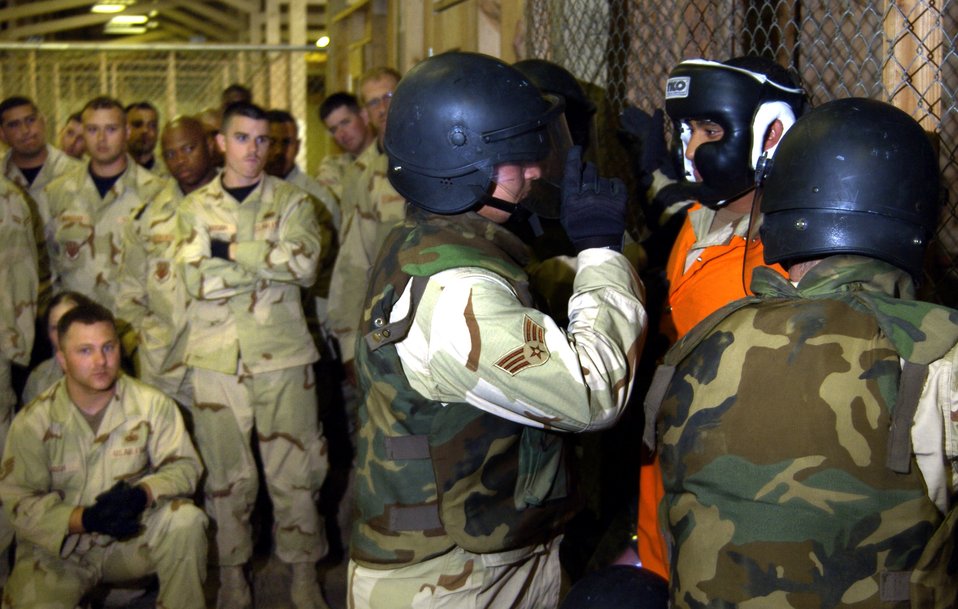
Learning detainee operations

FORT LEWIS, Wash. -- Airmen watch as instructors demonstrate proper safety techniques for extracting a detainee from a cell during a detainee operations training class here. Trainees are taught how to correctly enter and leave a cell while safely controlling either a hostile or compliant detainee. The class teaches Airmen how to humanely care for and control detainees.